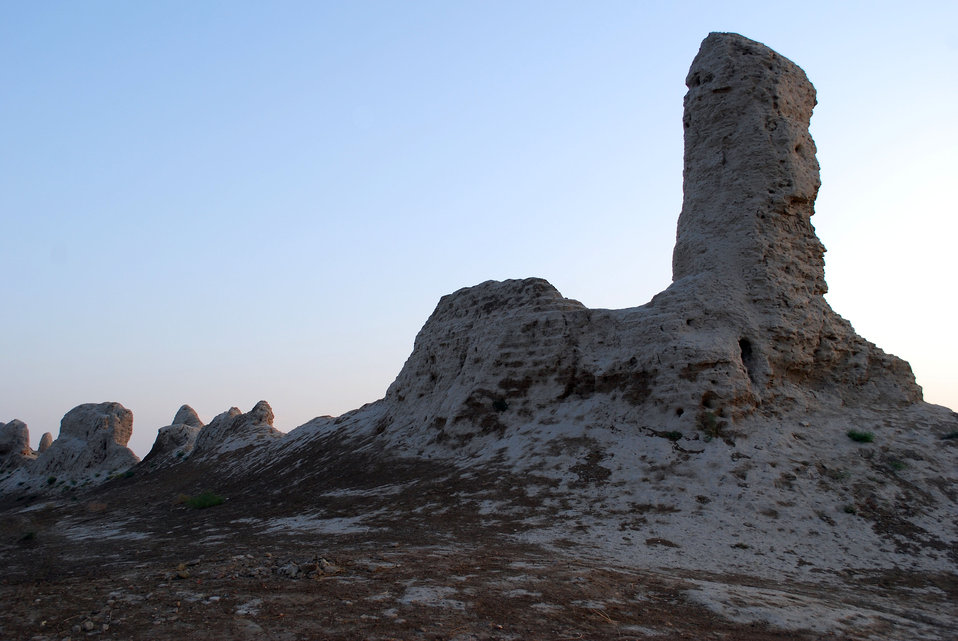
'On the Road' in Balkh Province